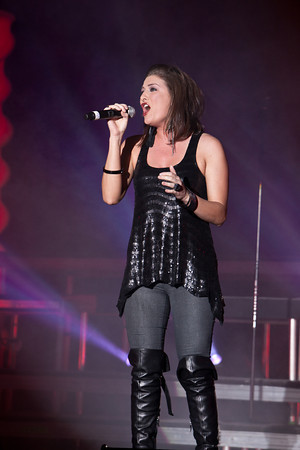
Got talent

Senior Airman Joleen Dedmon, from Luke Air Force Base, Ariz., sings